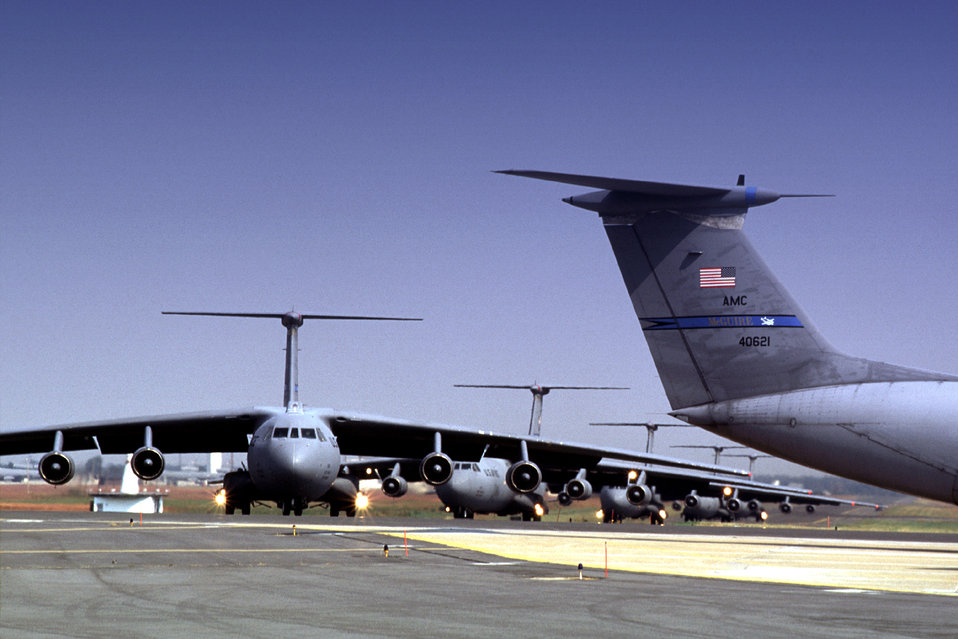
Line up

MCGUIRE AIR FORCE BASE, N.J. (AFPN) - C-141 Starlifters taxi down the runway here. Although the 6th Airlift Squadron is being drawn down to make way for the C-17 Globemaster III, its operations tempo has been on the rise.